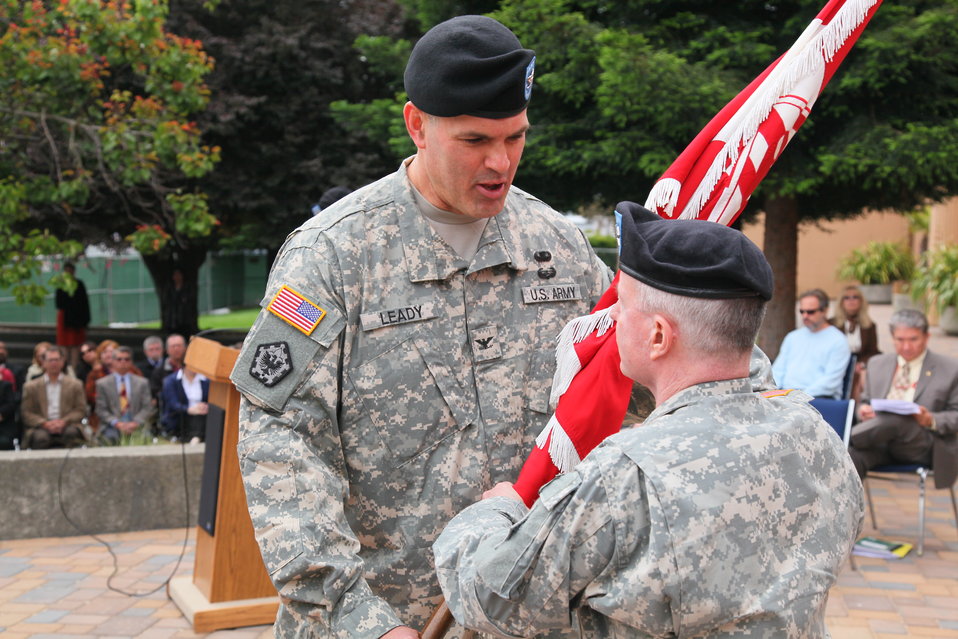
Relinquishing command

Col. Bill Leady (left) passes the guidon to Maj. Gen. Bo Temple, deputy commanding general of the U.S. Army Corps of Engineers, as he relinquishes command of the Corps' South Pacific Division in a ceremony at the Corps' Bay Model visitor center in Sausalito, Calif., June 3, 2011.